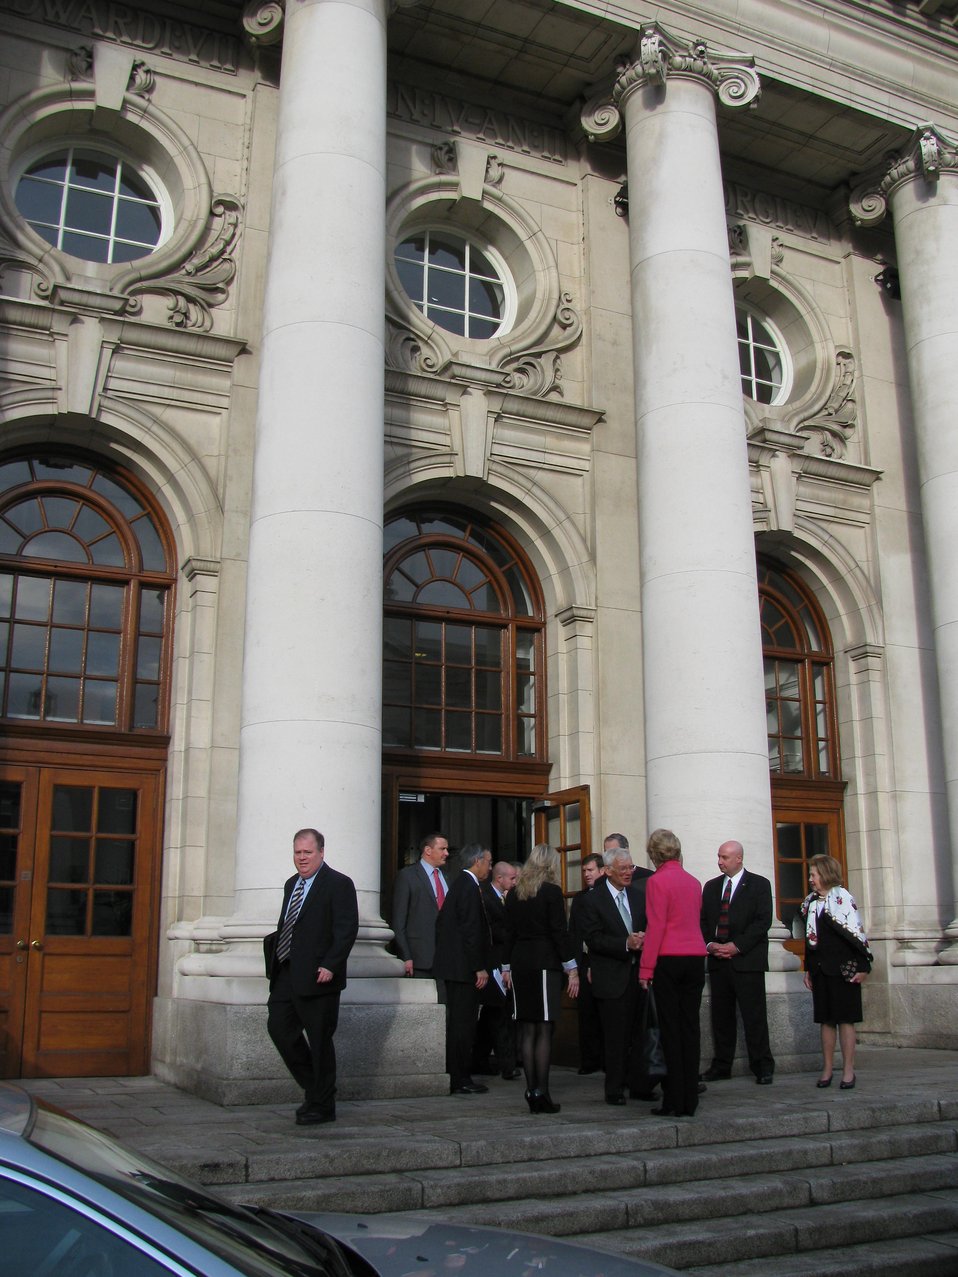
Secretary Chu exits Leinster House, where he met with the Taoiseach (or Prime Minister) of Ireland, Brian Cowen, about working together to develop clean, renewable and carbon free sources of energy. This is the same building where in June 1963, President Kennedy addressed a joint sitting of both Houses of the Irish Oireactas, and presented the Civil War battle flag of the brave 'Fighting Irish' 69th Brigade of the New York State Volunteers, which still hangs on proud display here.